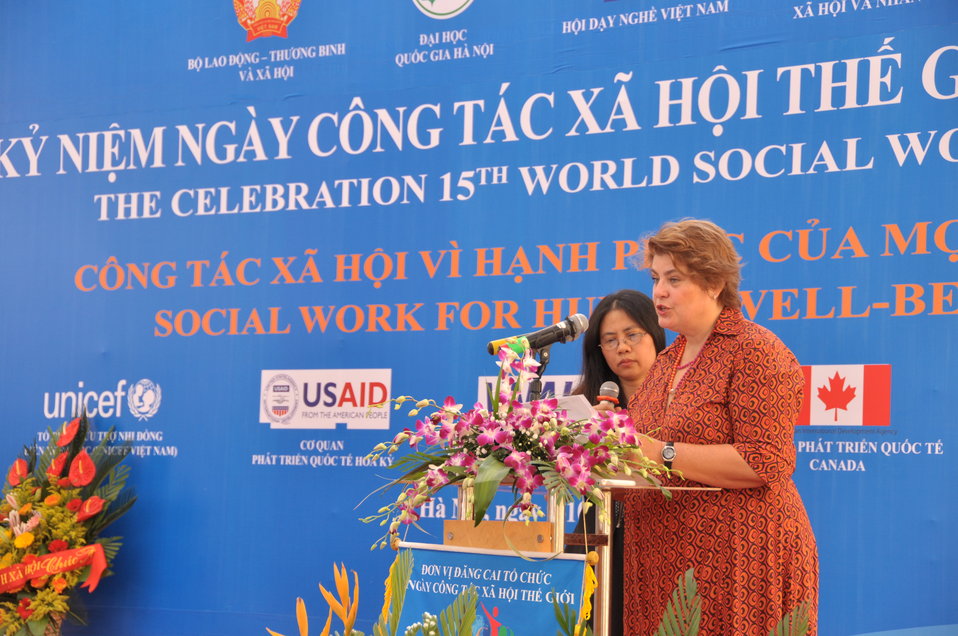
Ms. Lotta Sylwander, Representative, UNICEF Vietnam, speaks at the Social Work Day event in Hanoi

Photo: @USAIDVietnam, November 9, 2012